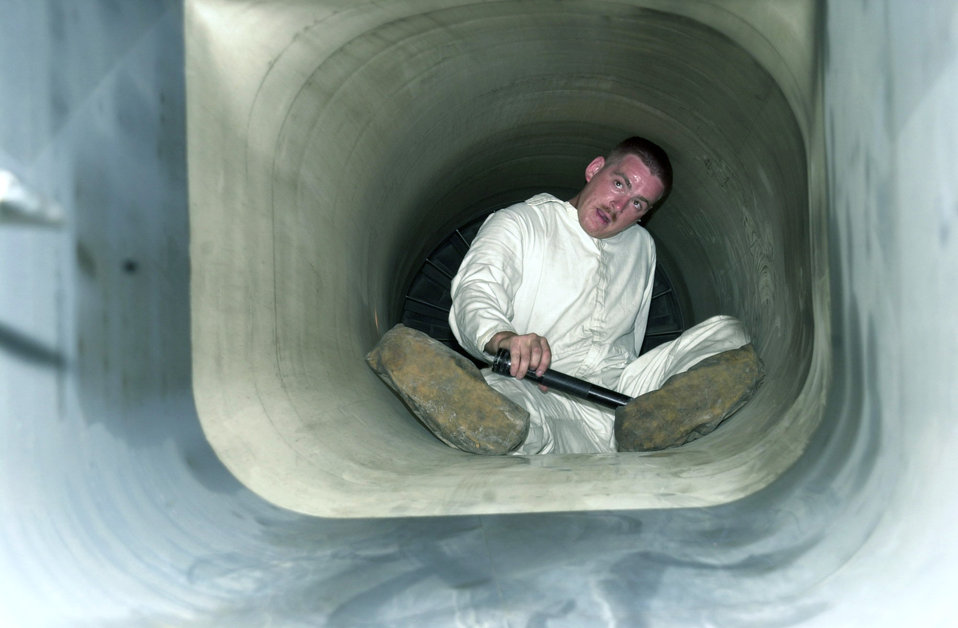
Intake break

SOUTHWEST ASIA -- Staff Sgt. Christopher Thompson inspects the interior of an F-15 Eagle engine. He is one of a few forward-deployed people qualified to inspect the intake of the aircraft. Sergeant Thompson is deployed from the 336th Aircraft Maintenance Squadron at Seymour Johnson Air Force Base, N.C.